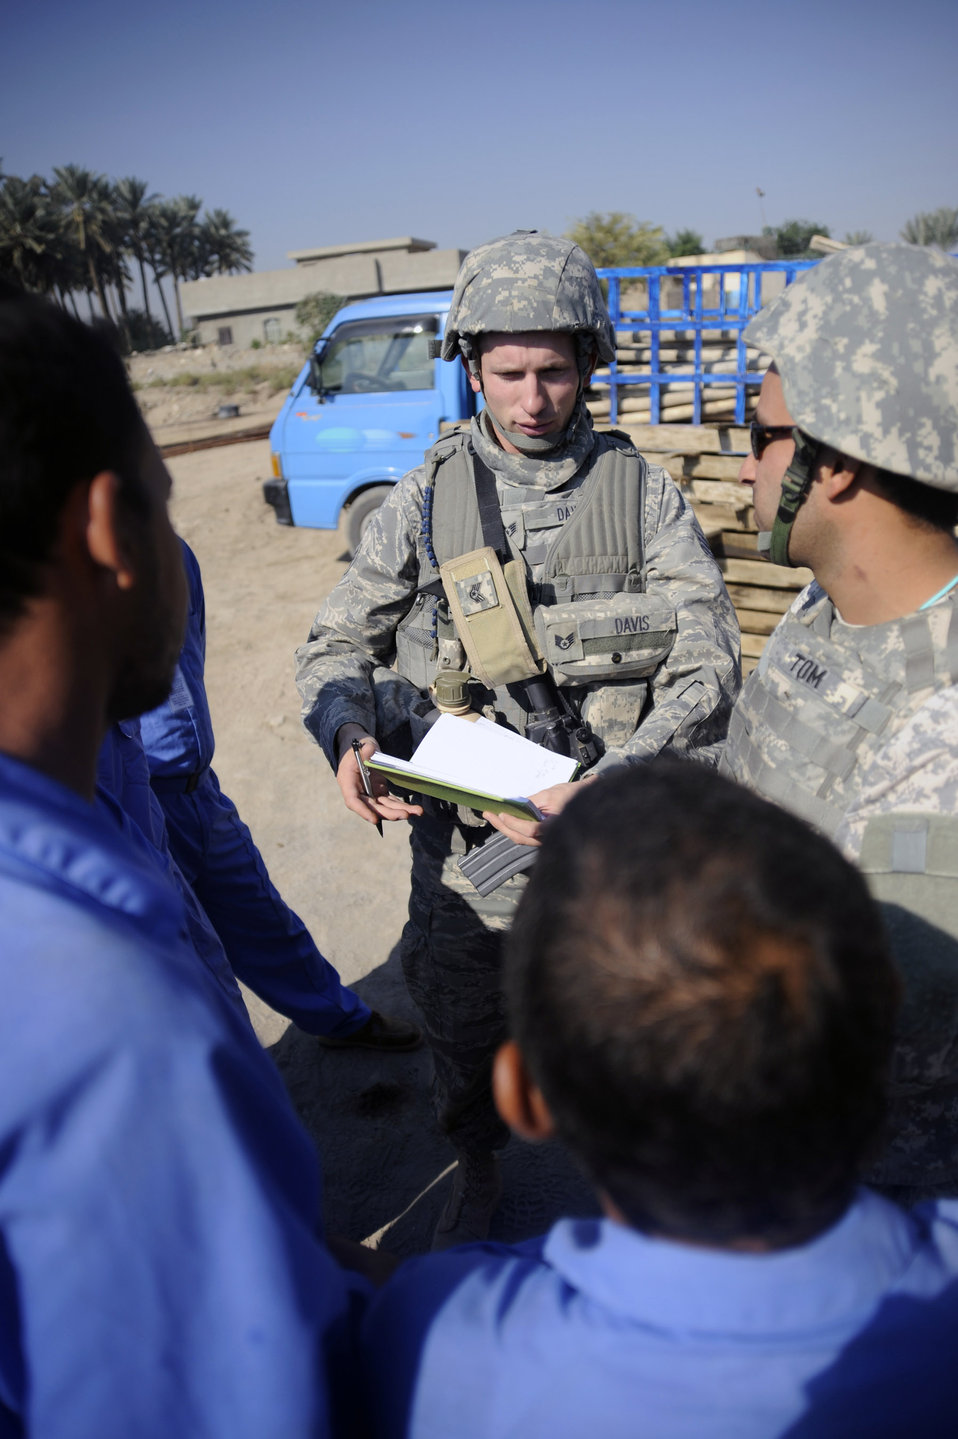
RED HORSE Airmen close chapter with Iraqis

Staff Sgt. Christopher Davis talks with site supervisors about the progress being made to the house and community center under construction in Hawr Rajab, Iraq. Sergeant Davis is a contracting officer representative for the Village of Hope program. He is a Hamilton, Mo. native, and deployed from the 820th RED HORSE Squadron from Nellis Air Force Base, Nev., where he is an airborne structural craftsman.